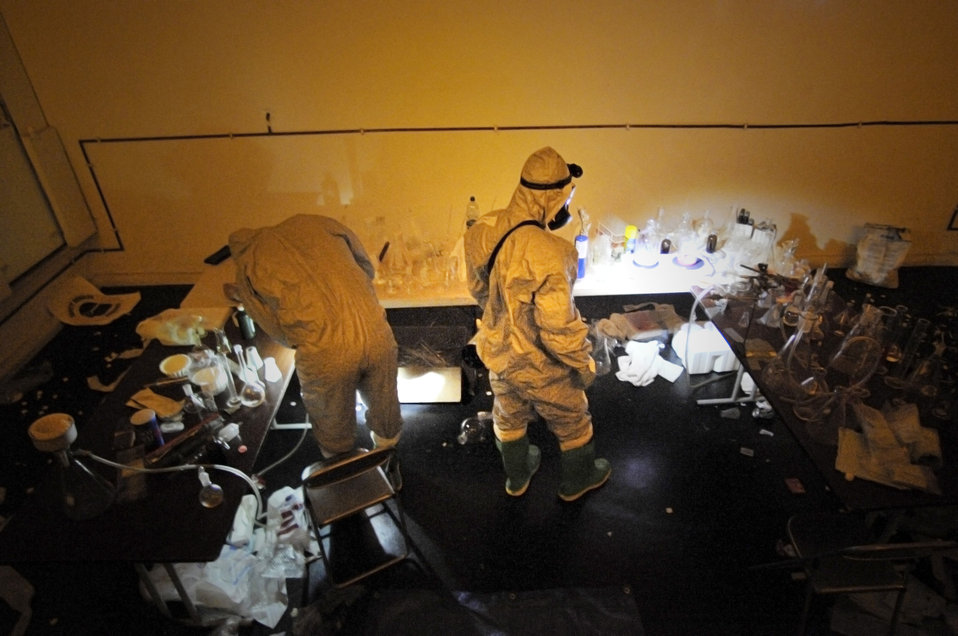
Airmen in Europe test threat responses

Airman 1st Class Mathew Kindoll and Staff Sgt. Christopher McFefries take a challenge in Level A suits during the 2009 Chemical, Biological, Radiological, and Nuclear Challenge June 22 at Ramstein Air Base, Germany. The CBRN Challenge consisted of six teams going head to head in six different scenarios, an equipment olympic challenge, and land navigation challenge. Airman Kindoll is assigned to the 48th Civil Engineer Squadron, and Sergeant McFefries is assigned to the 100th Civil Engineer Squadron.